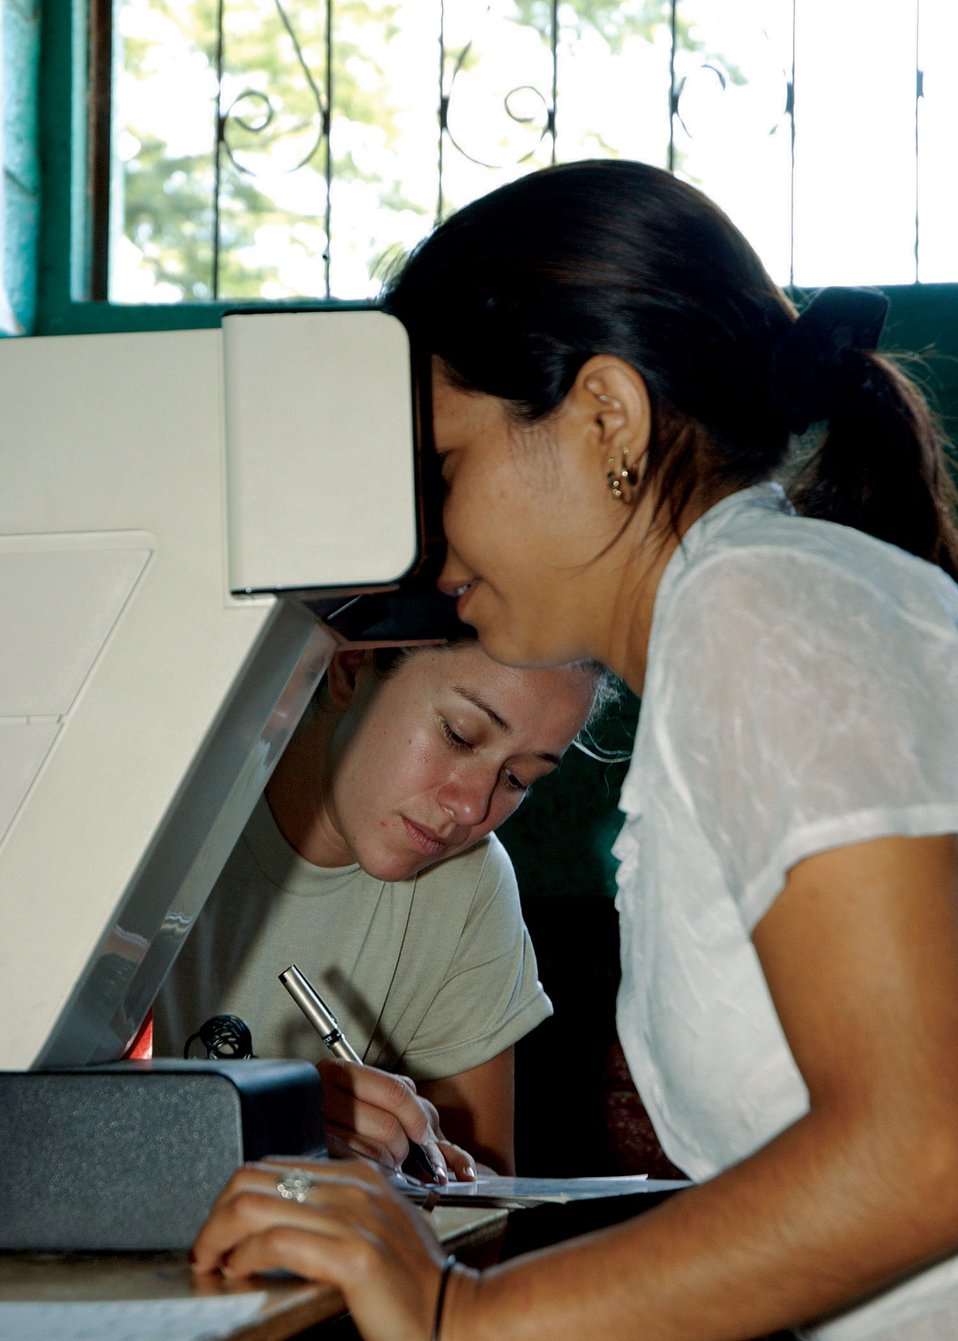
Exercise gives Guardsman a new perspective

Tech. Sgt. Shirley Morales takes notes during a vision screening at a school in Santa Rosa, Guatemala. Sergeant Morales, who was born and raised in Santa Rosa, accompanied the 163d Medical Group during a recent medical readiness training exercise to assist with translating for the team. Sergeant Morales is a force development technician with the 163rd Reconnaissance Wing.